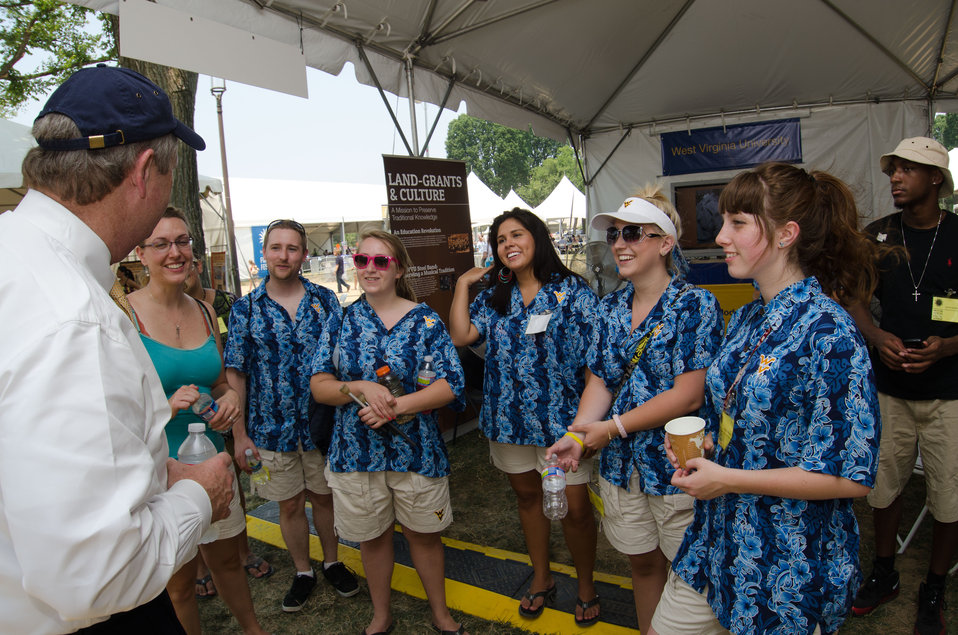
Agriculture Secretary Tom Vilsack chats with some of the West Virginia University steel drum performers, whose mission is to preserve traditional knowlage, a cornerstone of Morell Act and the Land-Grant universities, during the 2012 Smithsonian Folklife Festival, on the National Mall in Washington, D.C. on Friday, June 29, 2012 Near by is the Mississippi State University Mobile Veterinary Clinic that serves the Northern Mississippi area by providing Spay and neuter services to those in need, and provides medical experience for students. One of the three themes this year is “Campus and Community.” It celebrates the 150 years of the USDA and the Land-Grant University System. The U.S. Department of Agriculture (USDA) and the Land-Grant system extend education across the country, contributing to American agriculture success and rural prosperity. “Campus and Community” has demonstrations, discussions, hands-on activities, and entertainment to that showcase the many ways that this partnership works to improve American agriculture and rural life.